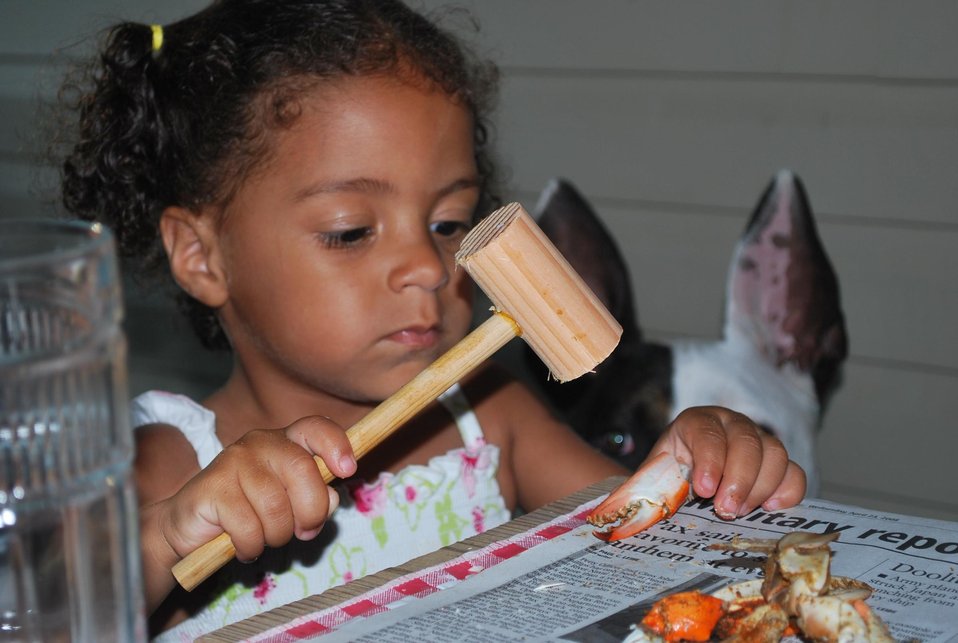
Even toddlers can pick blue crabs.